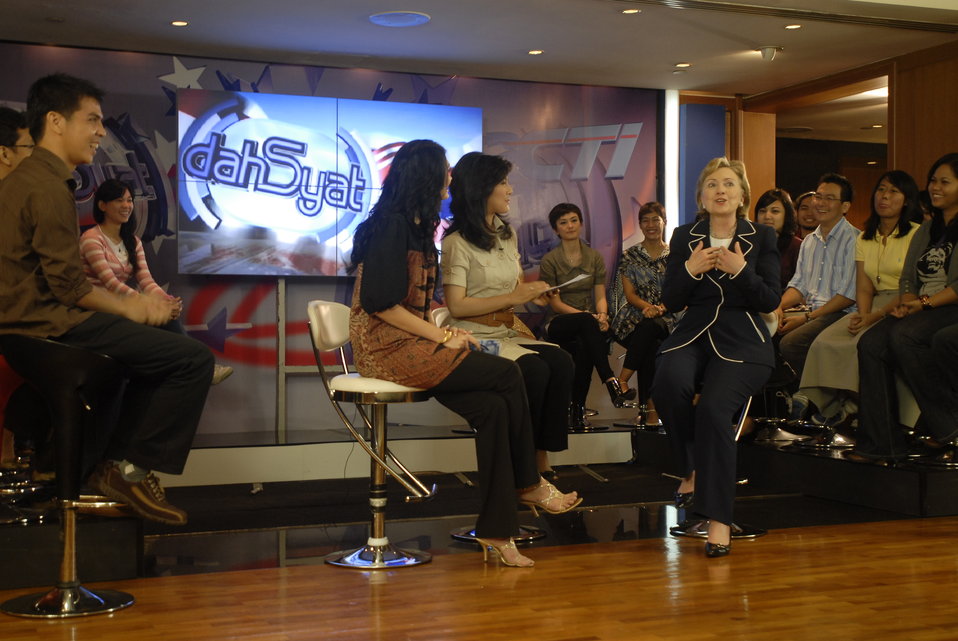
Secretary Clinton on Indonesian 'Dahsyat' TV Show

Hosts Luna Maya (left) and Isyana Bagoes Oka (center) interviews U.S. Secretary of State, Hillary Clinton on top rated Indonesian youth variety show “Dahsyat” (“Awesome”) in Jakarta, Indonesia February 19, 2009.